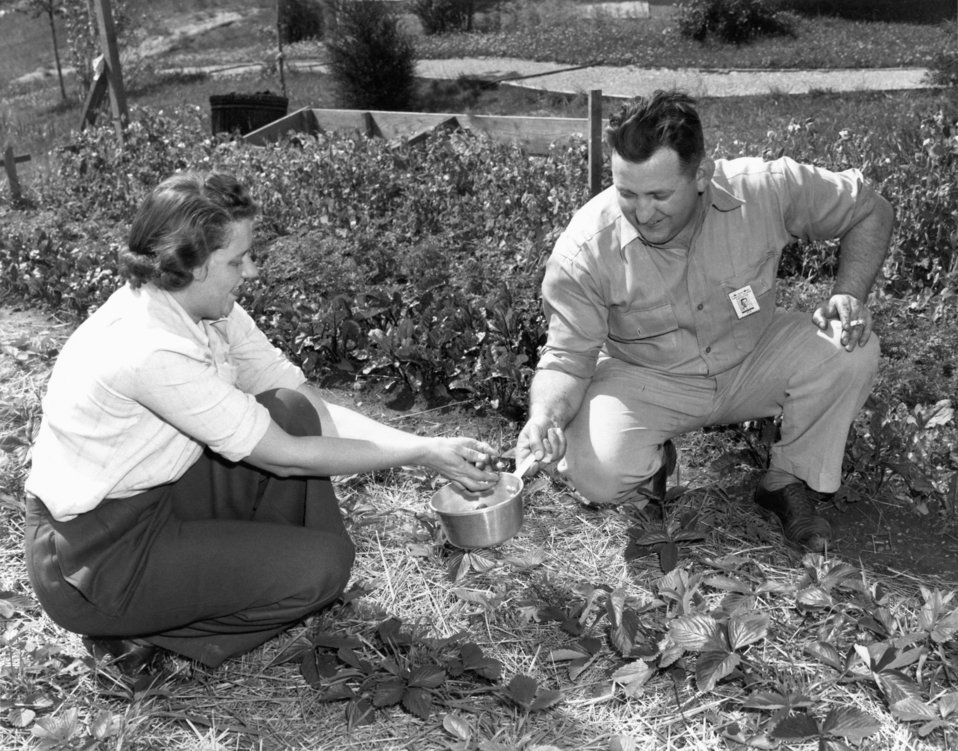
Victory Garden 1945 Oak Ridge

pro548-2 DOE photo Ed Westcott 5-11-1945 Mr. and Mrs. Ruel W. Cairnes Oak Ridge Tennessee